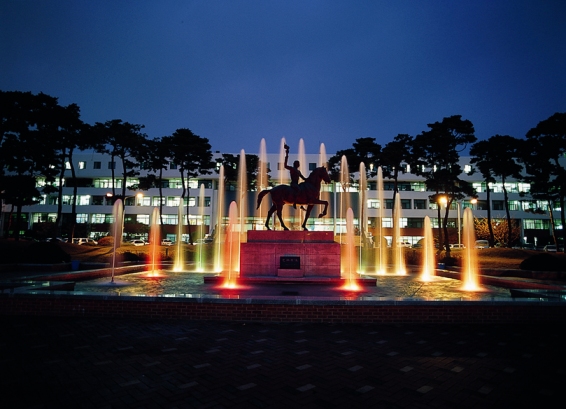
The Statue of Pioneer. Fran√ßais†: 'la Fontaine du pionnier'.